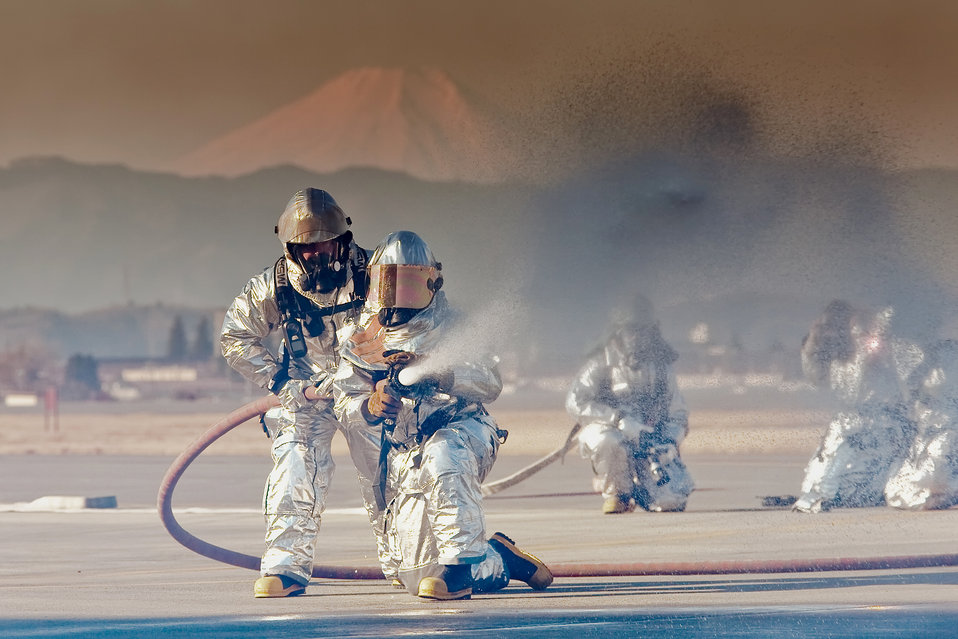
Emergency management exercise

Firefighters from the 374th Civil Engineer Squadron put out a simulated aircraft fire during an emergency management exercise Feb. 4, 2011, at Yokota Air Base, Japan.